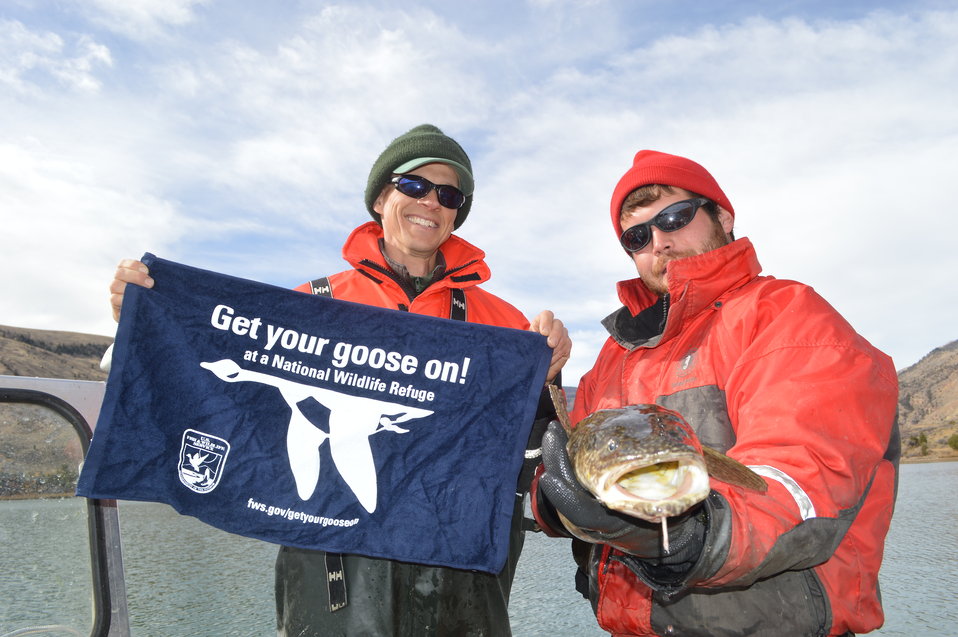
Get your Goose on for Burbot!